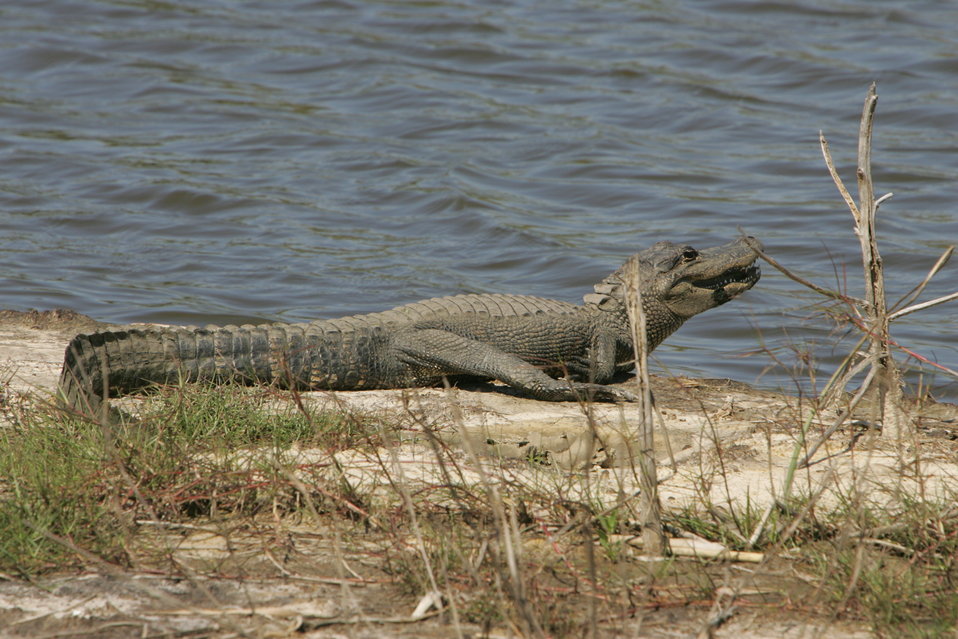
American alligator

An alligator suns by the shore.